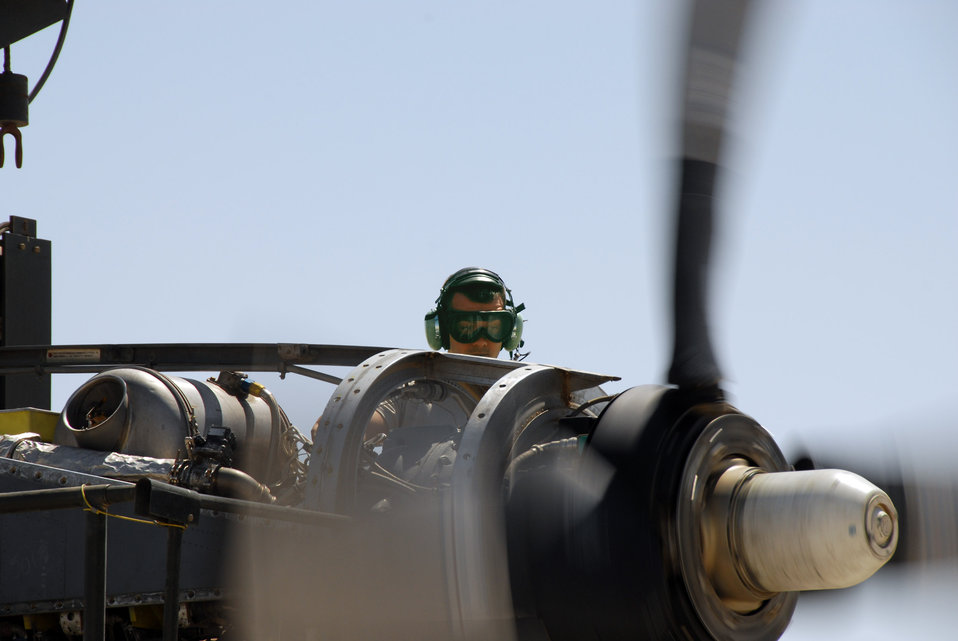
April 29 airpower summary

Senior Airman Ryan Overdorff tests a newly repaired C-130 Hercules engine April 24 at an air base in Southwest Asia. Airman Overdorff is a maintenance journeyman with the 379th Expeditionary Maintenance Squadron propulsion flight. Airmen from the flight repair engines sent in from throughout the Central Command area of responsibility.